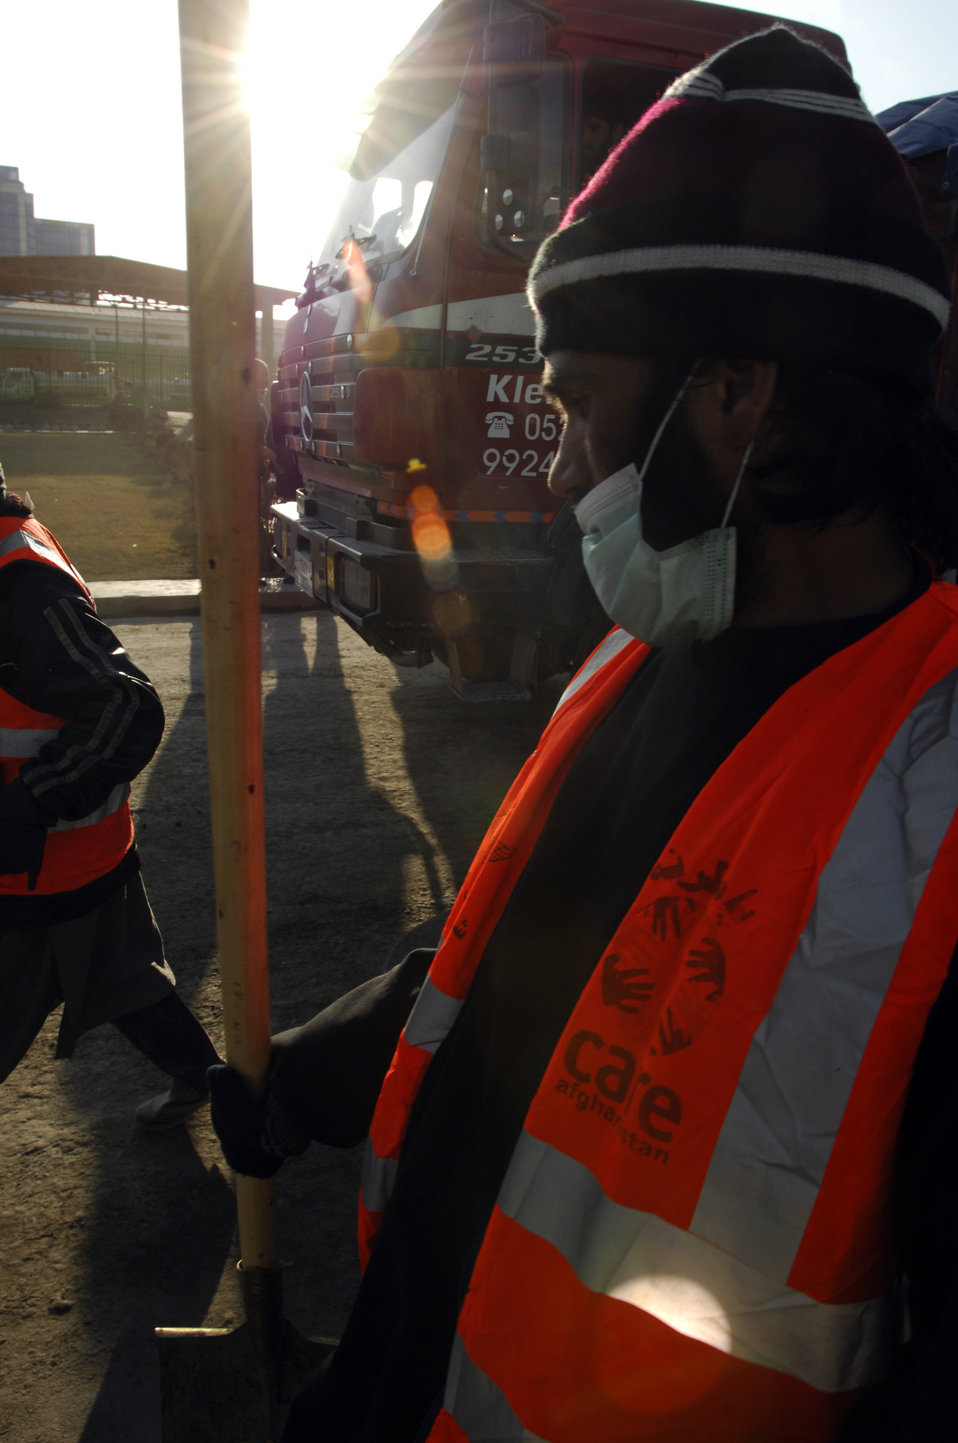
Care53